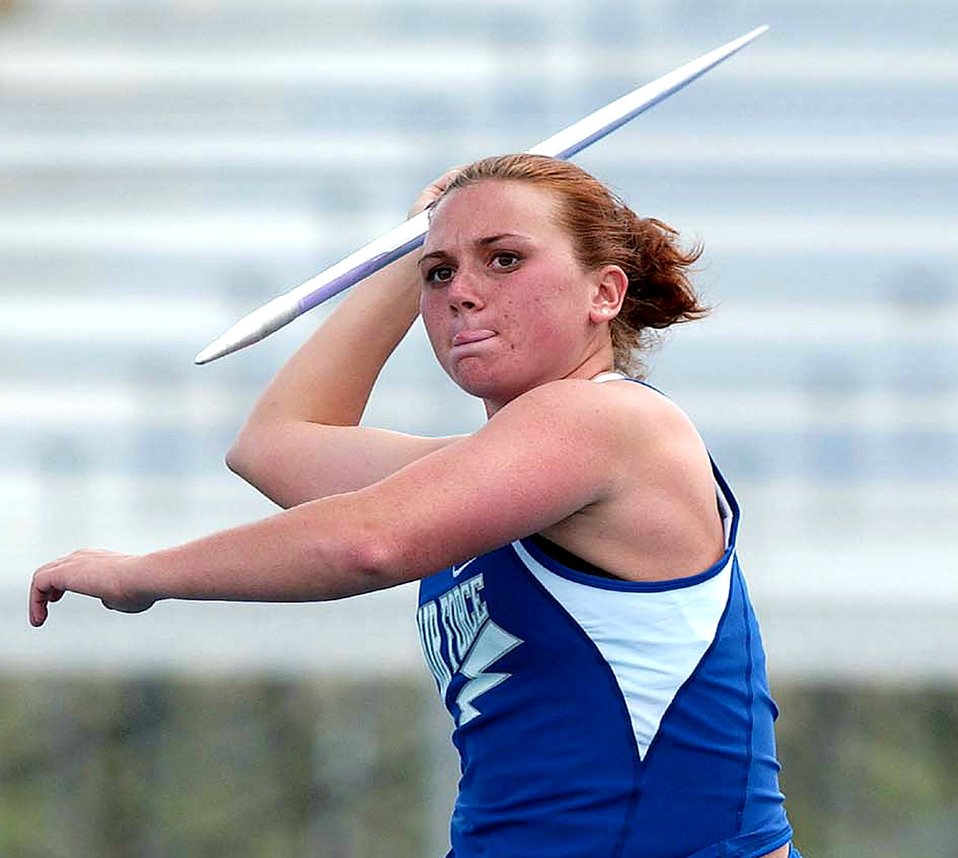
Air Force athlete earns silver medal at Olympic Trials

U.S. Air Force Academy record-holder Dana Pounds placed second in the javelin throw in the finals of the 2008 U.S. Olympic Trials June 30 at Hayward Field in Eugene, Ore.